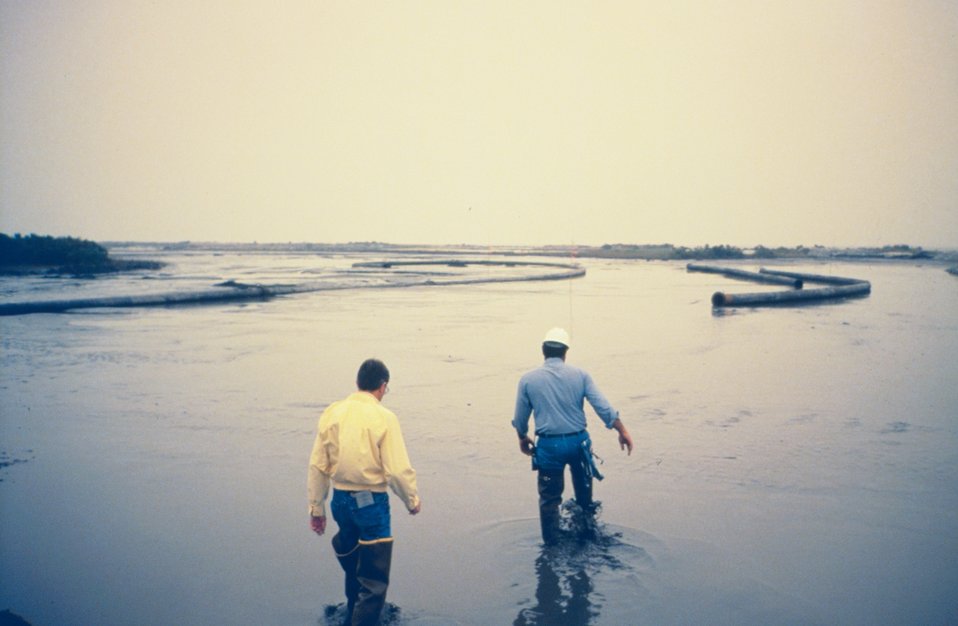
Post restoration, a site visit.